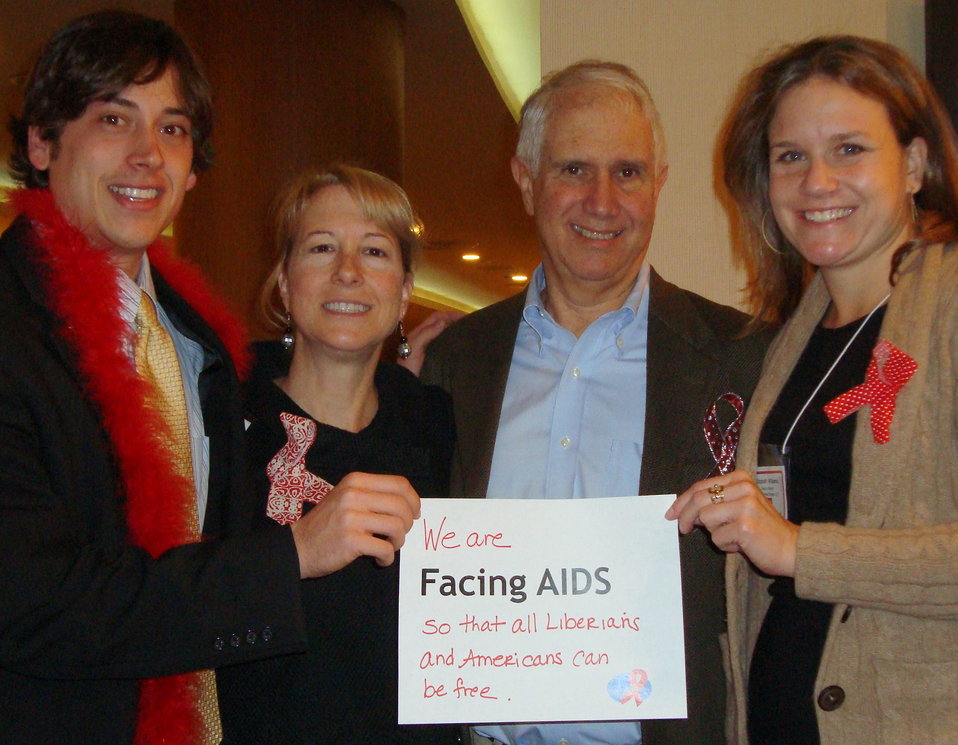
FacingAIDSCampaign 025